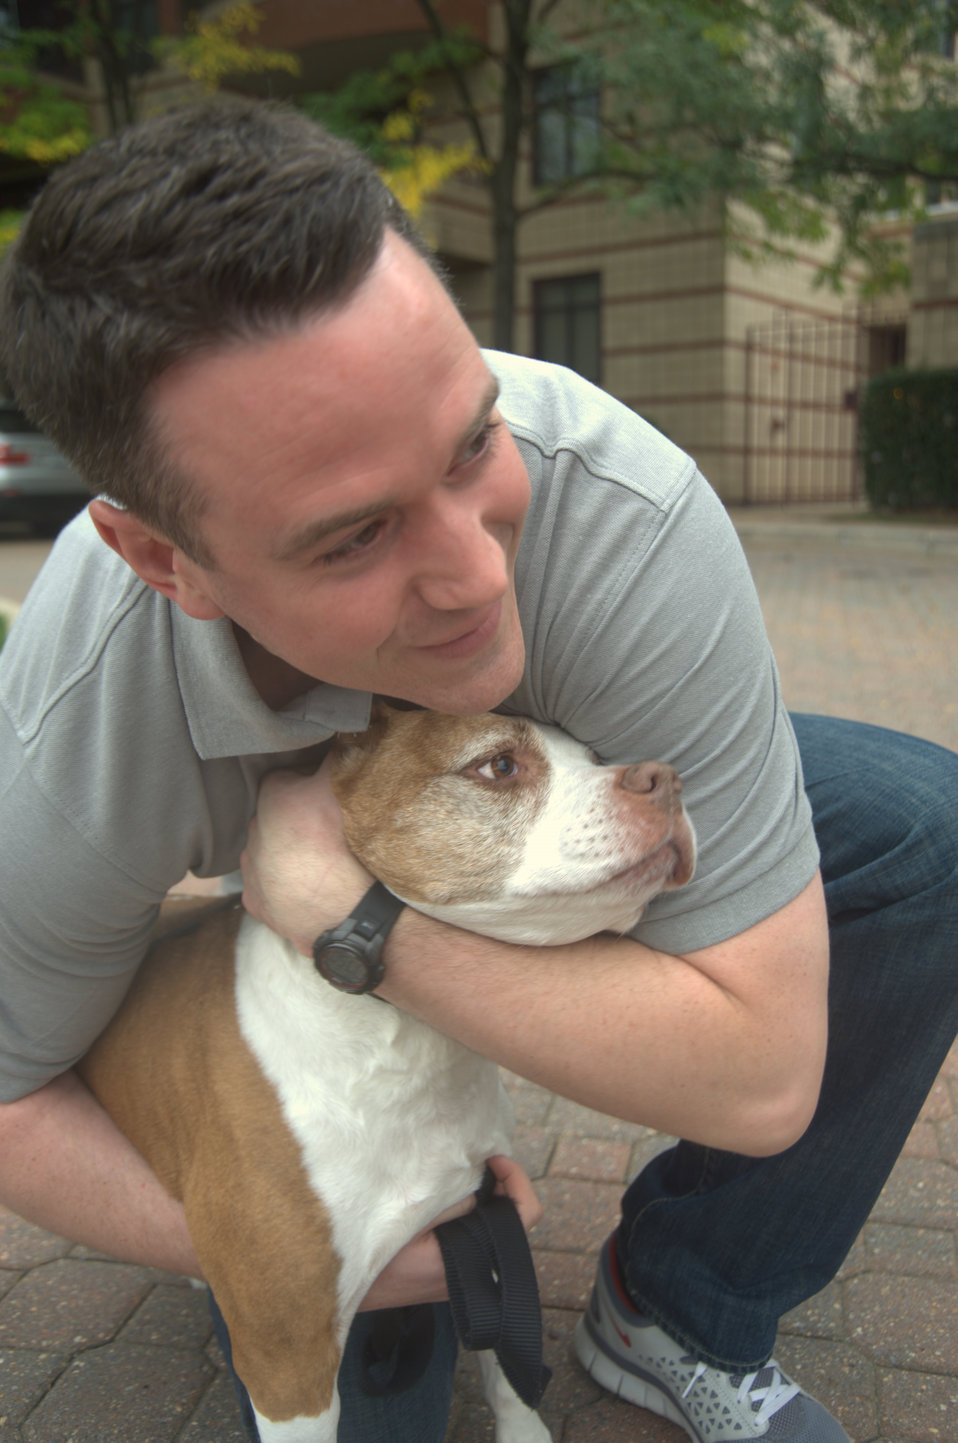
A life for a life

Former Senior Airman David Sharpe embraces his dog Cheyenne at their home Sept. 22, 2011, in Arlington, Va. Sharpe is the founder of Pets 2 Vets, a nonprofit organization that pairs shelter animals with veterans who live with post-traumatic stress disorder. Sharpe credits Cheyenne with saving his life.